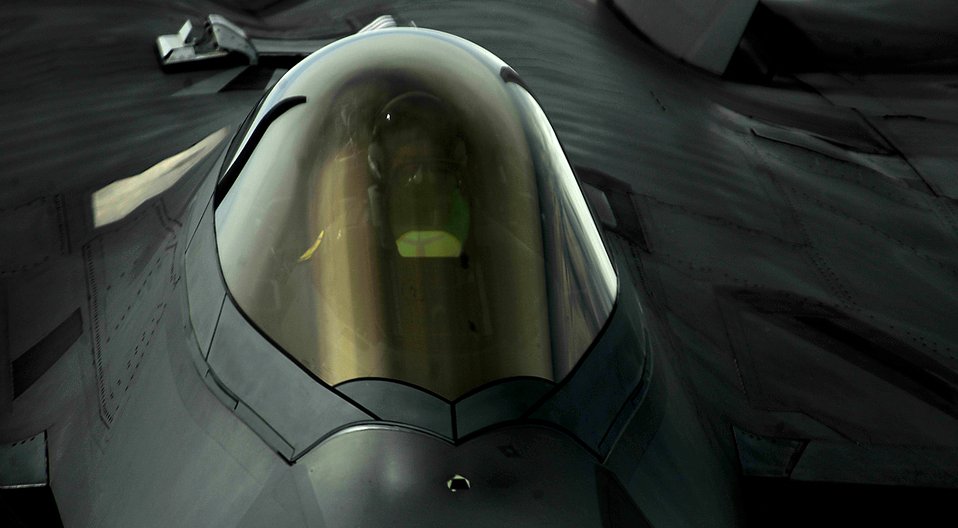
F-22 Raptor

A 1st Fighter Wing's F-22 Raptor from Joint Base Langley-Eustis, Va. pulls into position to accept fuel from a KC-135 Stratotanker with the 756th Air Refueling Squadron, Joint Base Andrews Naval Air Facility, Md. off the east coast on May 10, 2012. The first Raptor assigned to the Wing arrived Jan. 7, 2005. This aircraft was allocated as a trainer, and was docked in a hanger for maintenance personnel to familiarize themselves with its complex systems. The second Raptor, designated for flying operations, arrived Jan. 18, 2005. On Dec. 15, 2005, Air Combat Command commander, along with the 1 FW commander, announced the 27th Fighter Squadron as fully operational capable to fly, fight and win with the F-22. (U.S. Air Force Photo by: Master Sgt. Jeremy Lock)